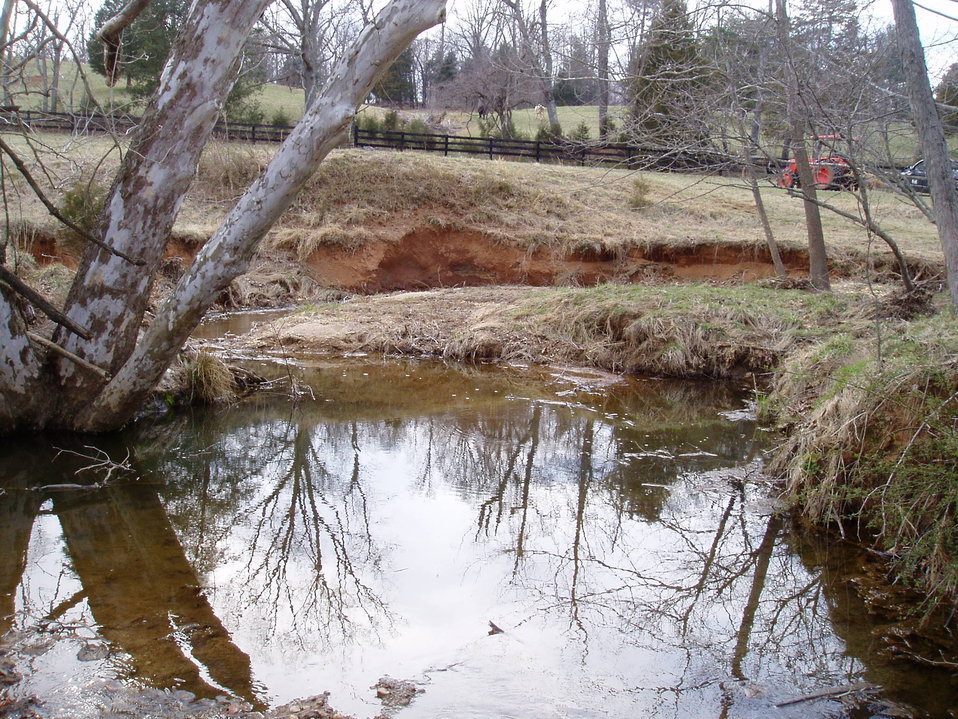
Beaver Run Station 1000 Before Photo

This photo is of an eroded streambank before habitat restoration practices were implemented using natural stream channel design techniques.